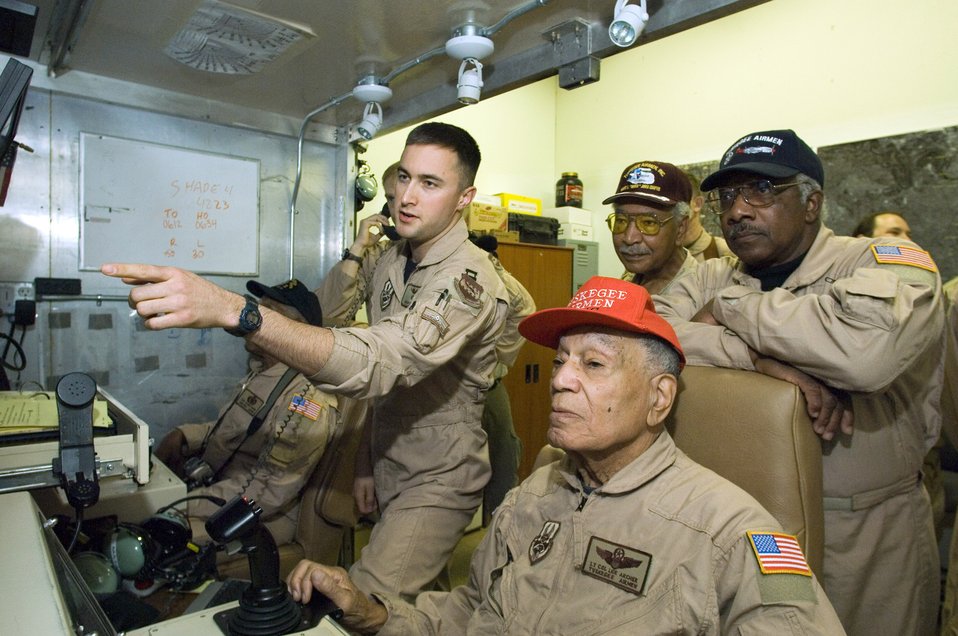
Tuskegee Airmen return to warzone

BALAD AIR BASE, Iraq (AFPN) -- Capt. Mark Ferstl (left) explains an unmanned aerial vehicle's ground control station to Tuskegee Airmen retired Lt. Col. Lee Archer (sitting) retired Lt. Col Robert Ashby (back right) and retired Col. Dick Toliver (leaning on the chair). The Tuskegee Airmen are here to meet deployed 332nd Expeditionary Operations Group Airmen and observe operations. The Army created the Tuskegee Airmen unit in 1941.